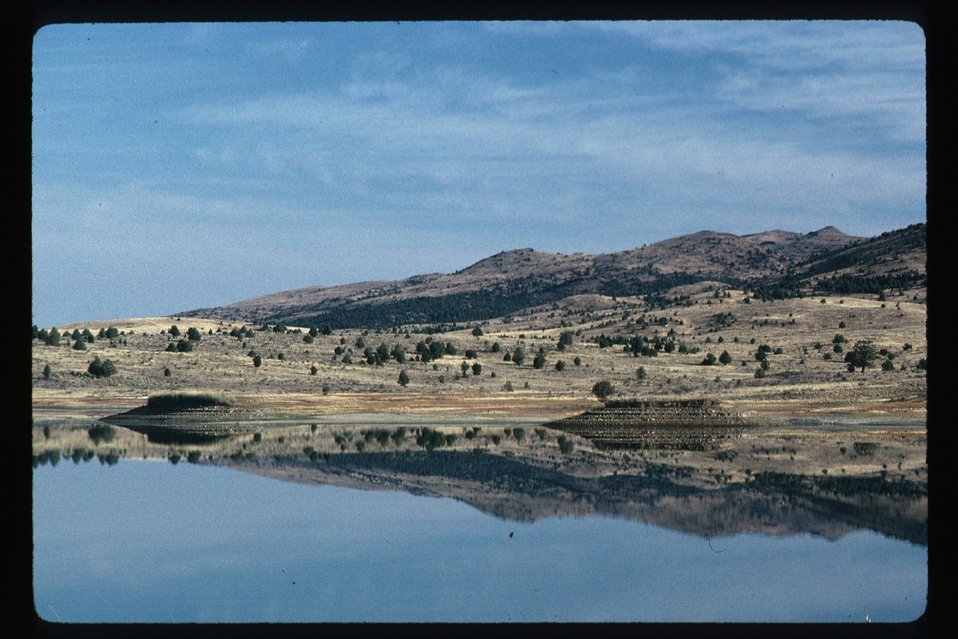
Dougal Reservoir Scenic LSRD Lower Snake River District